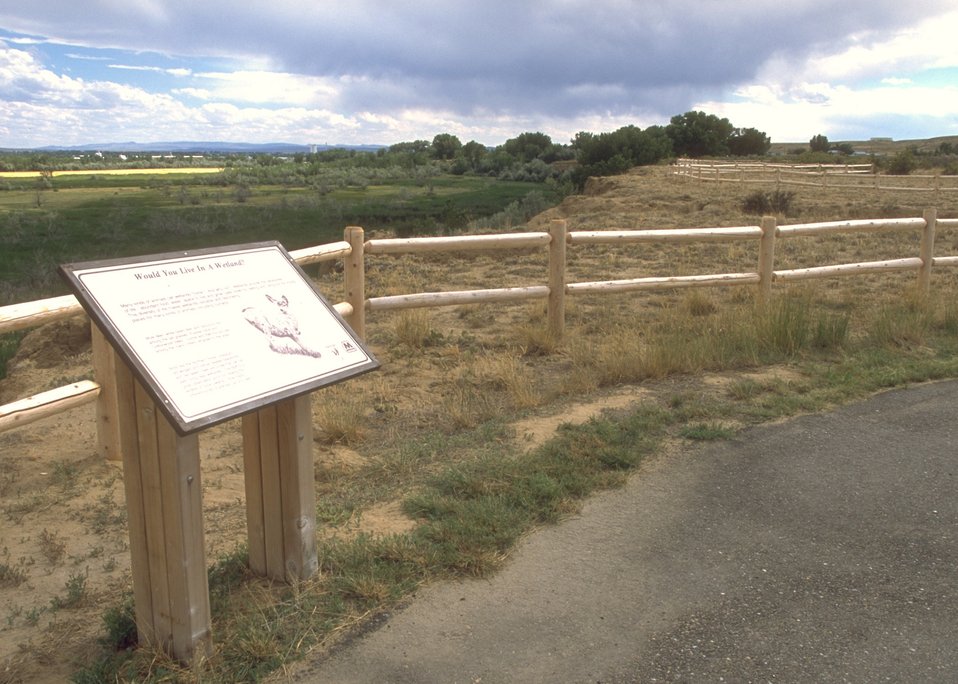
Duck Swamp Interpretive Area, Worland Field Office.